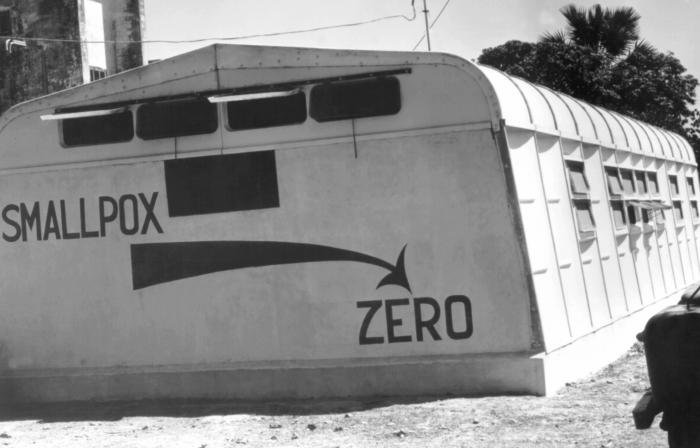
This 1966 image shows writing on a side of a clinic annex building in East Pakistan (since 1971, Bangladesh) indicating the World Health Organization's goal of eradicating smallpox. The annex building was located next to the WHO smallpox eradication program headquarters in Dacca (now Dhaka), and across a field from the old Cholera Hospital and its associated research laboratories. The laboratories are now the International Center for Diarrheal Disease Research - Bangladesh.